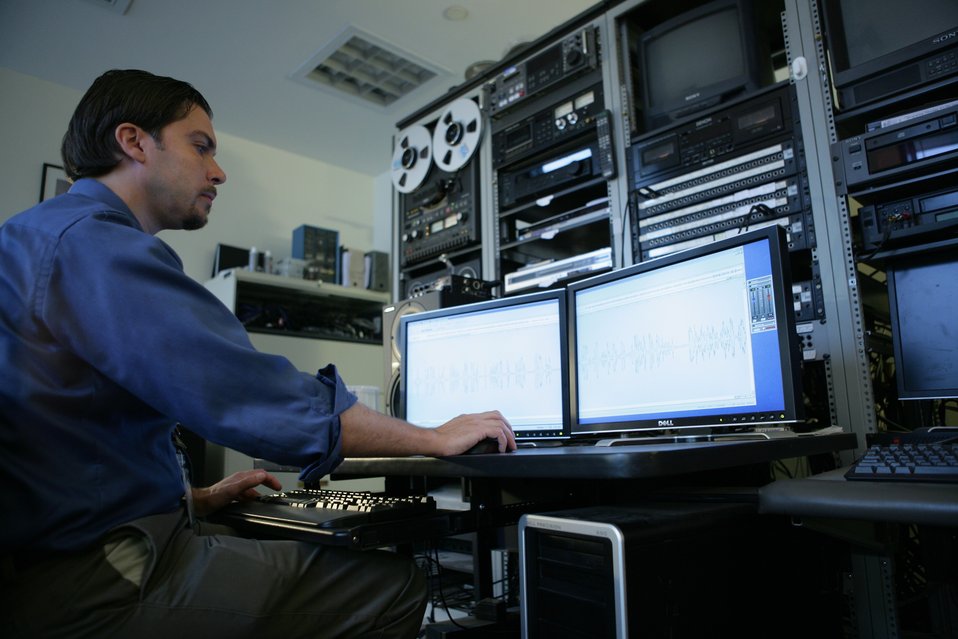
Bill Bjelf, Assistant Digital Archivist for AV Collections (JFK Library Foundation) works on audiovisual material at the library's digital audio workstation.; Location: John F. Kennedy Presidential Library, Boston, MA